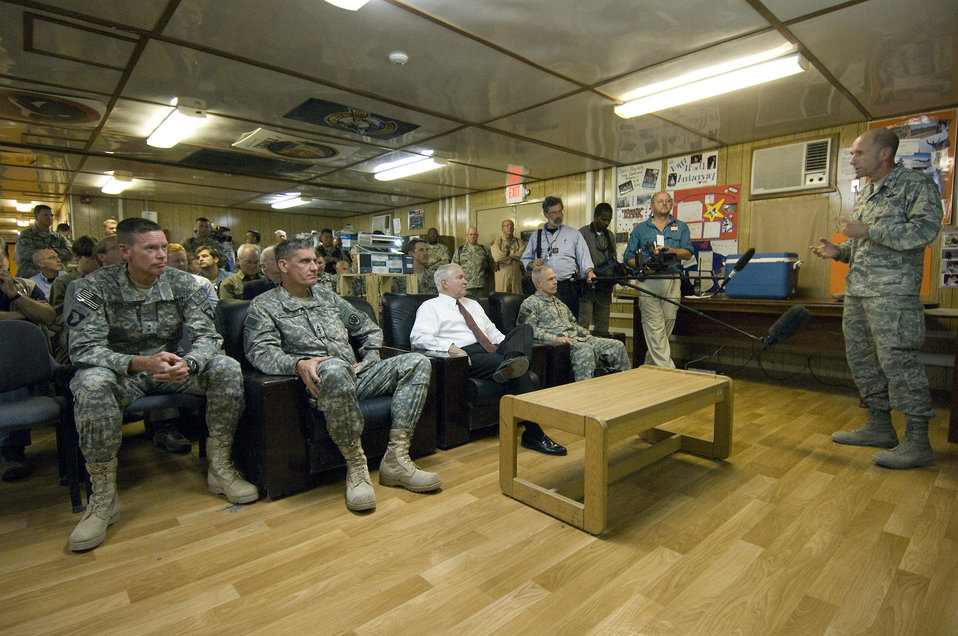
Secretary Gates examines close-air support at Bagram

Brig. Gen. James M.